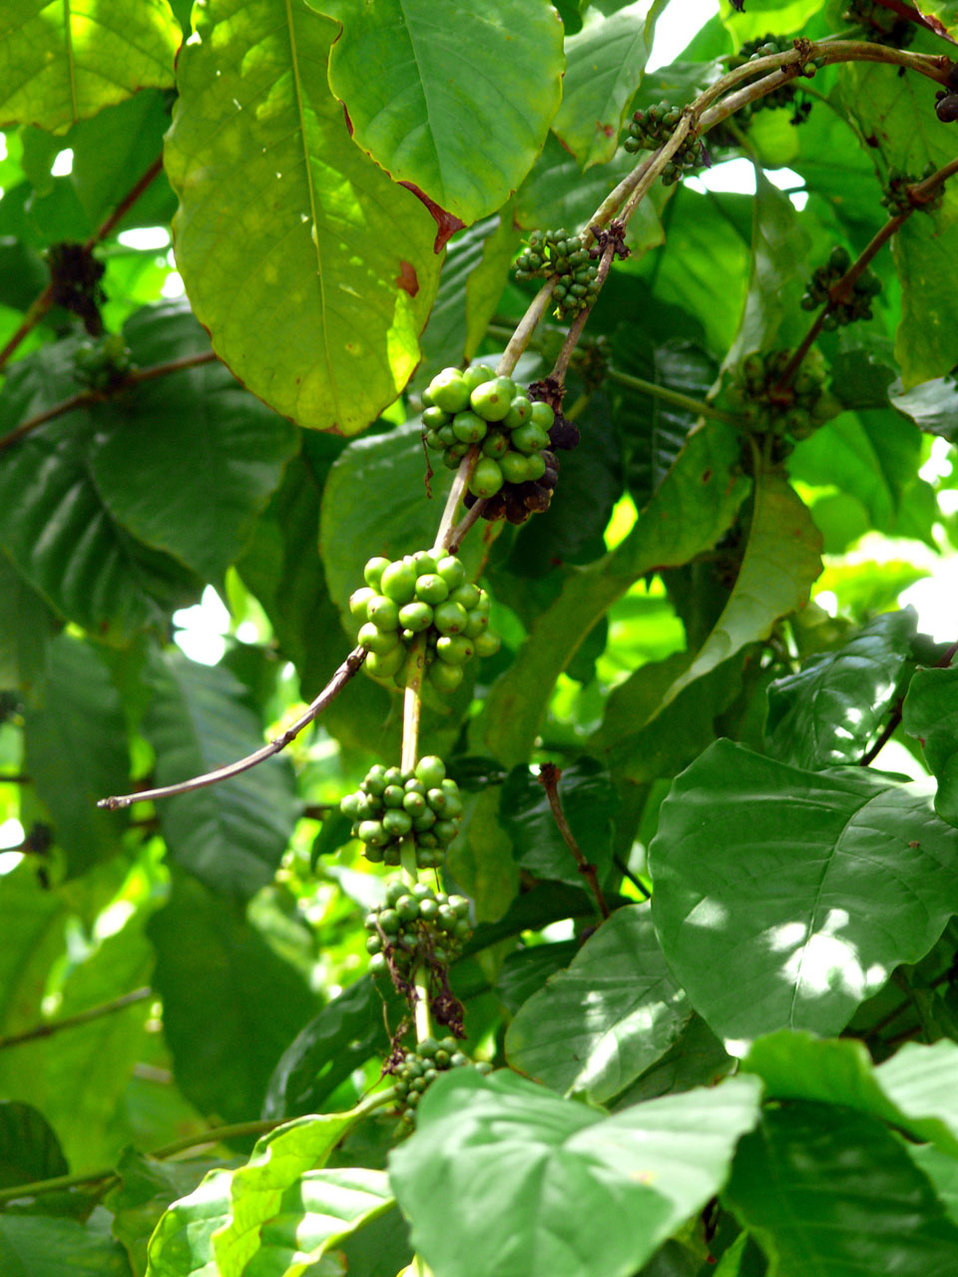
Coffee tree.